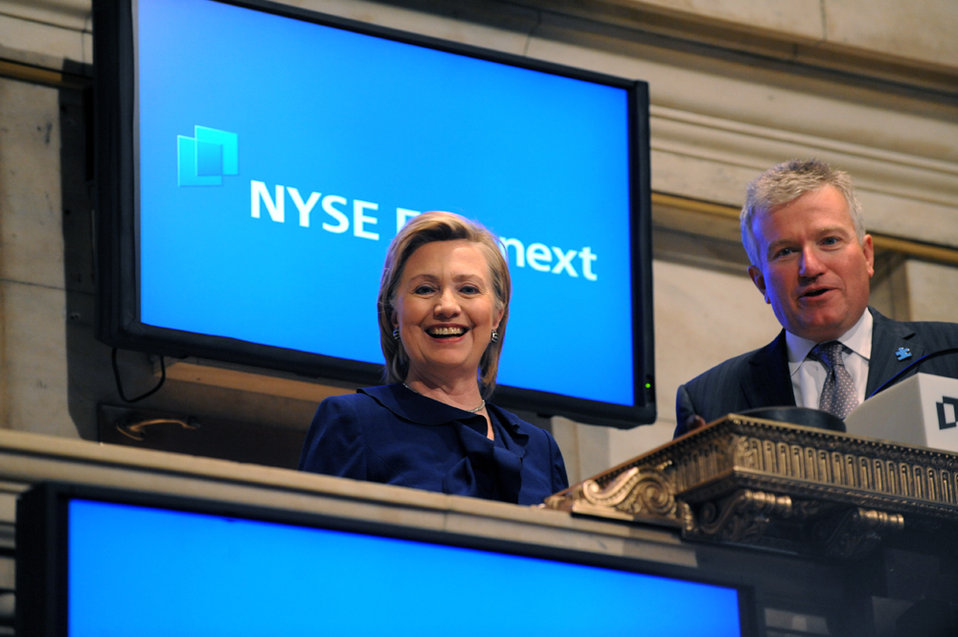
UNGA 2009: Secretary Clinton Meets With New York Stock Exchange CEO

U.S. Secretary of State Hillary Rodham Clinton on the floor of the New York Stock Exchange (NYSE) with NYSE Chief Executive Officer Duncan Niederauer during the 64th Session of the UN General Assembly in New York City, New York September 21, 2009.